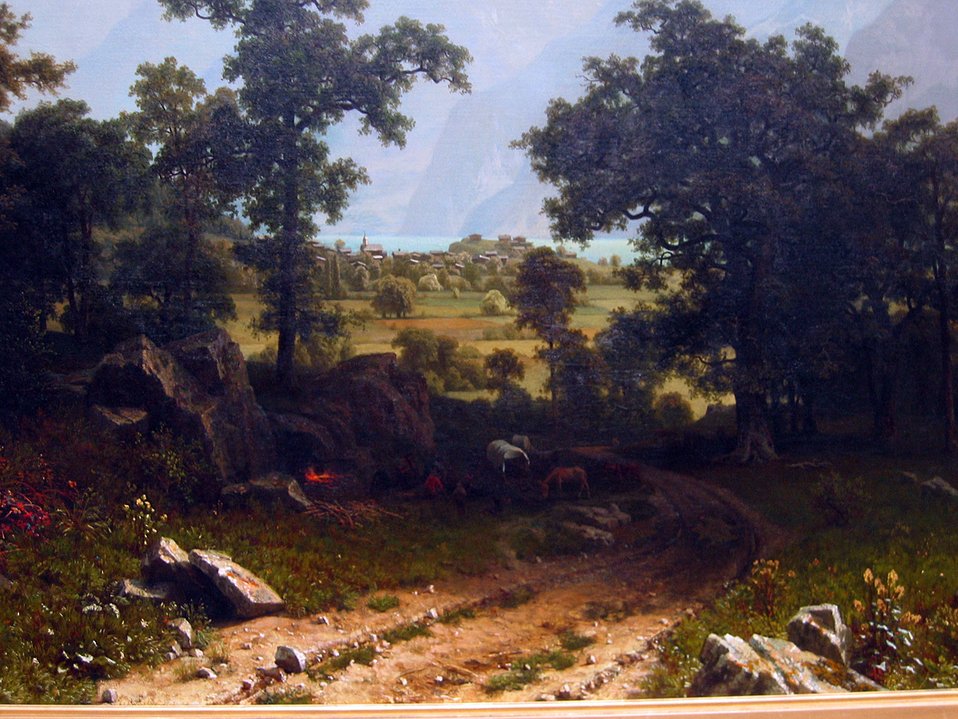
Bierstadt LakeLucerne 1858 closeup2